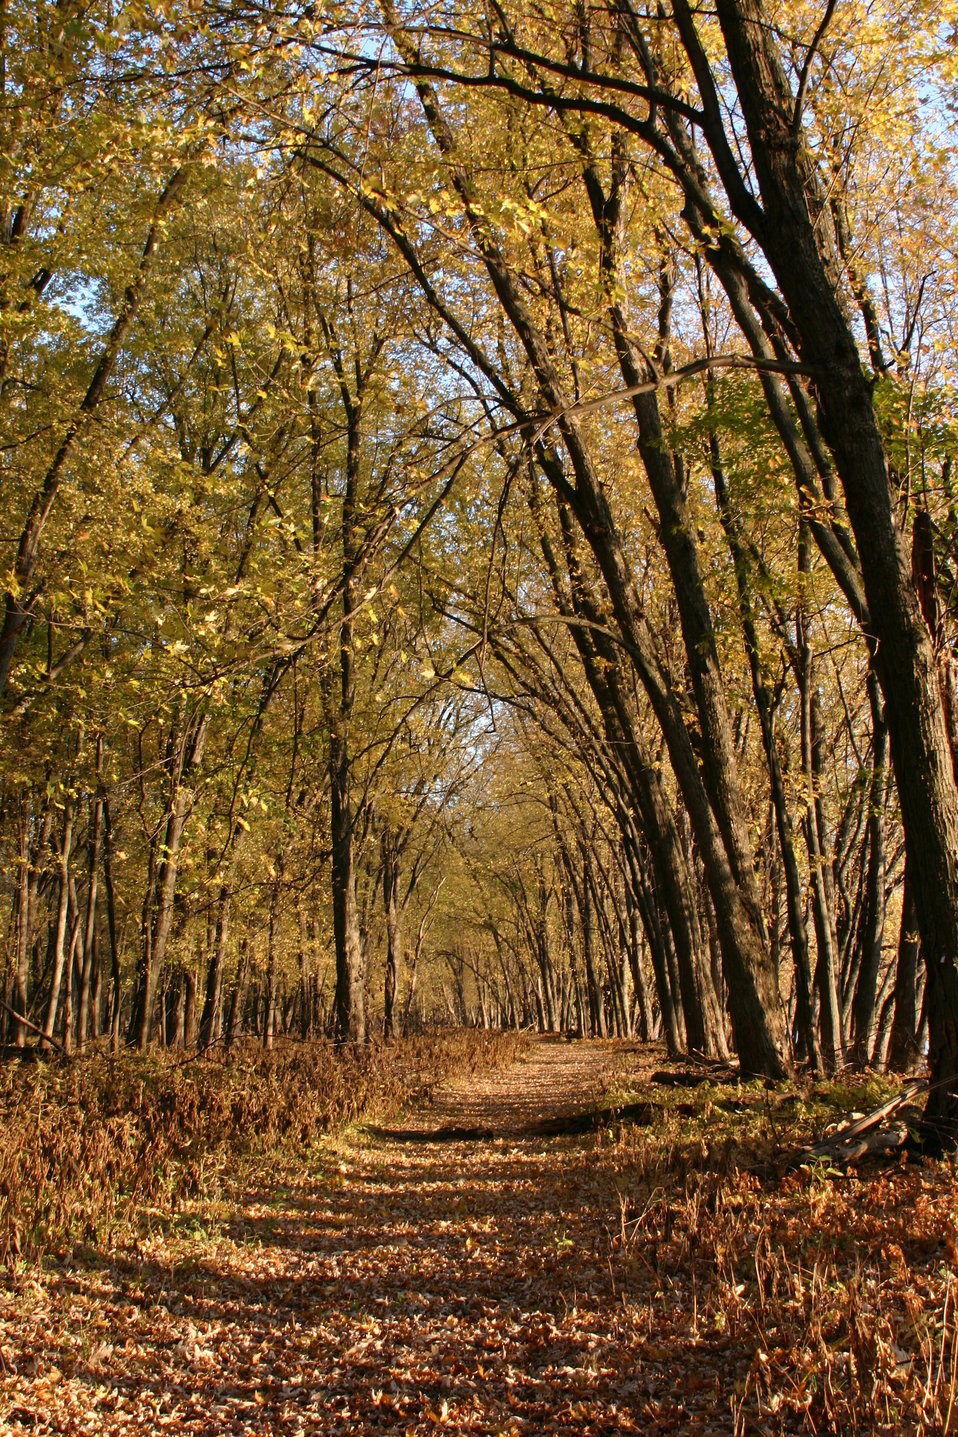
Photo of the Week - Jeep Trail in Fall (VT)

Photo of the Week - 1/2/12

The Jeep Trail along the Missisquoi River Delta at Missisquoi NWR. Fall foliage lingered to create a golden canopy over this popular accessible trail this year.